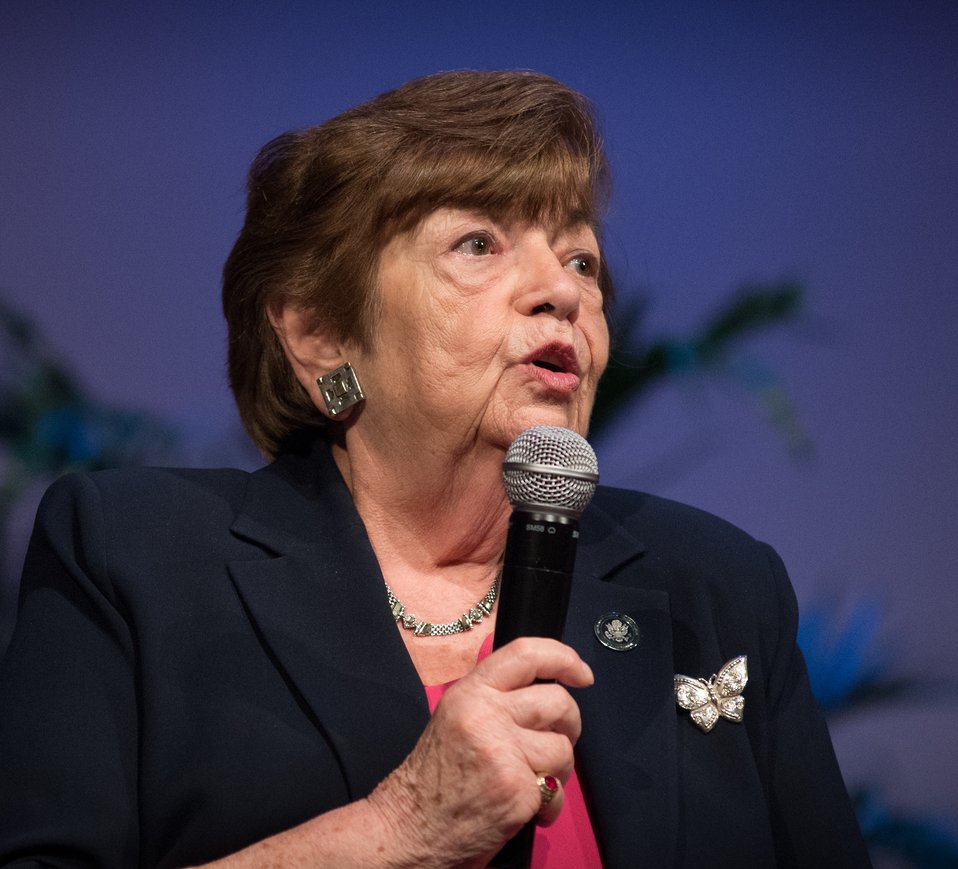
Theresienstadt Concentration Camp Czech Jewish Holocaust Survivor Ela Stein-Weissberger spoke during the 2013 Federal Inter-Agency Holocaust Remembrance Day, at the Lincoln Theater, on Wednesday, April 17, 2013, in Washington, D.C. Ms. Stein-Weissberger talks about her experience of ‘The Night of Broken Glass’, when the Nazi smashed the Stein home. During her imprisonment at Theresienstadt Concentration Camp, she took part in a children’s play ‘Brundibar’ that was part of a German SS propaganda film that showed model camp conditions and activities. The film was never released by the German government, but did survive since then. She was shown in the cast, when it was used in the CBS News program – 60 Minutes – ‘The Nazi Deception.’ She also displayed her cloth ‘Jude’ badge that identified her as being Jewish during the Nazi uprising. Since the 1979 President’s Commission on the Holocaust, an annual proclamation signed by the President of the United States recognizes the importance of remembering the atrocities of the Holocaust that should never be forgotten or be ignored.